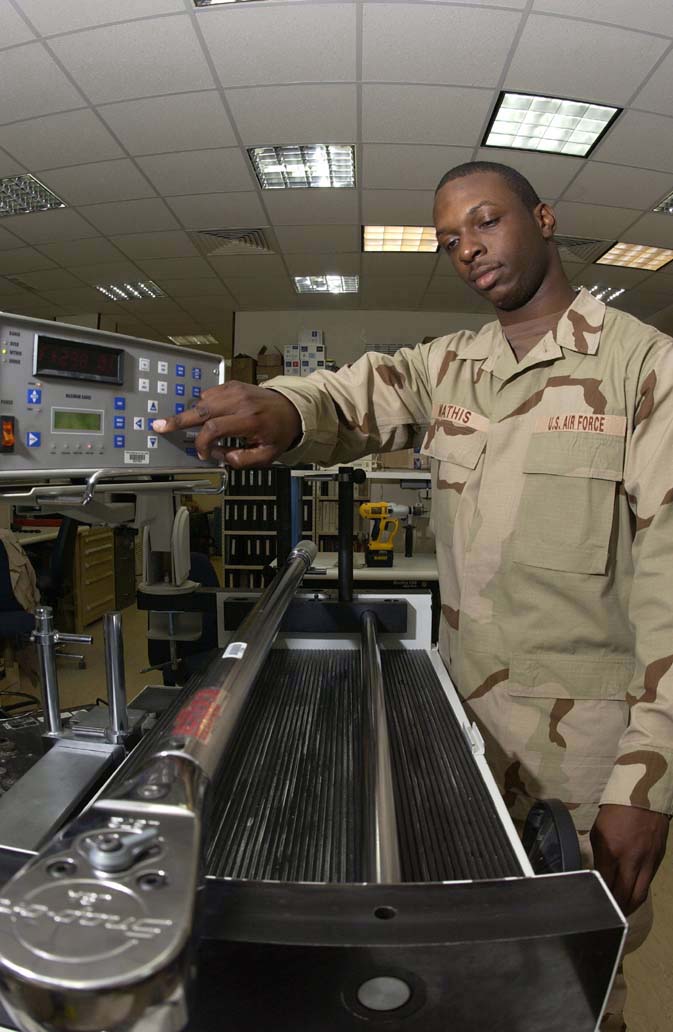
PMEL Airmen ensure equipment is ready for fight

SOUTHWEST ASIA -- Senior Airman Javario Mathis calibrates a torque wrench to ensure it is breaking at the proper torque value. He is assigned to the 379th Expeditionary Maintenance Squadron's precision, measurement and equipment laboratory, and he is deployed from Charleston Air Force Base, S.C.